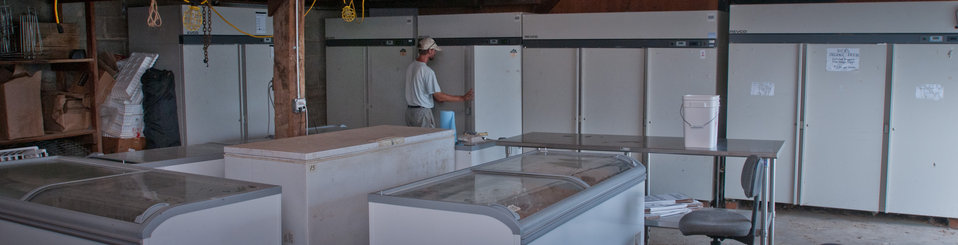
Farm assistant George Kloph checks freezers full of meat products raised at Nick’s Organic Farm, in Adamstown, MD, on Friday, July 12, 2013. The farm, owned by Nick Maravell, produces Black Angus beef, chicken, turkey, eggs, hay, soybeans, corn, alfalfa, orchard grass, rye; and other crops. The cattle are100% grass-fed receiving certified organic pasture, certified organic hay (in winter), water and mineral salts mixed with sea kelp. The cattle are not fed hormones, antibiotics or animal products. Poultry feed from grain is ground from organic grain. The poultry also graze on organic pastures. The farm has conducted on-farm research with federal, state and non-profit agencies to refine organic practices.